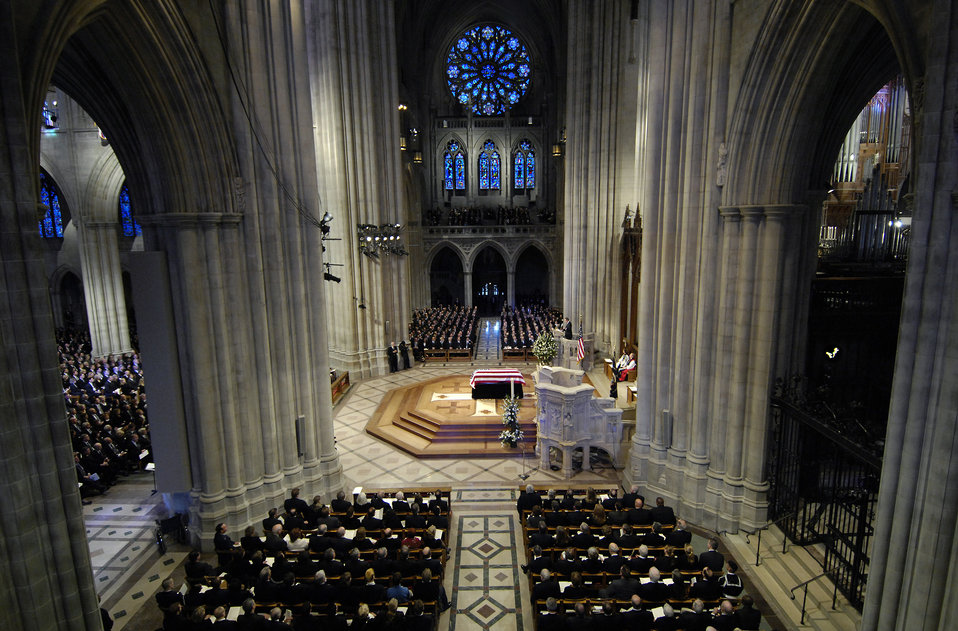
State funeral

A state funeral service was held for former President Gerald R. Ford Jan 2 at the National Cathedral. The president's final resting place is in his hometown of Grand Rapids, Mich., at a site just north of the Gerald R. Ford Presidential Library and Museum.